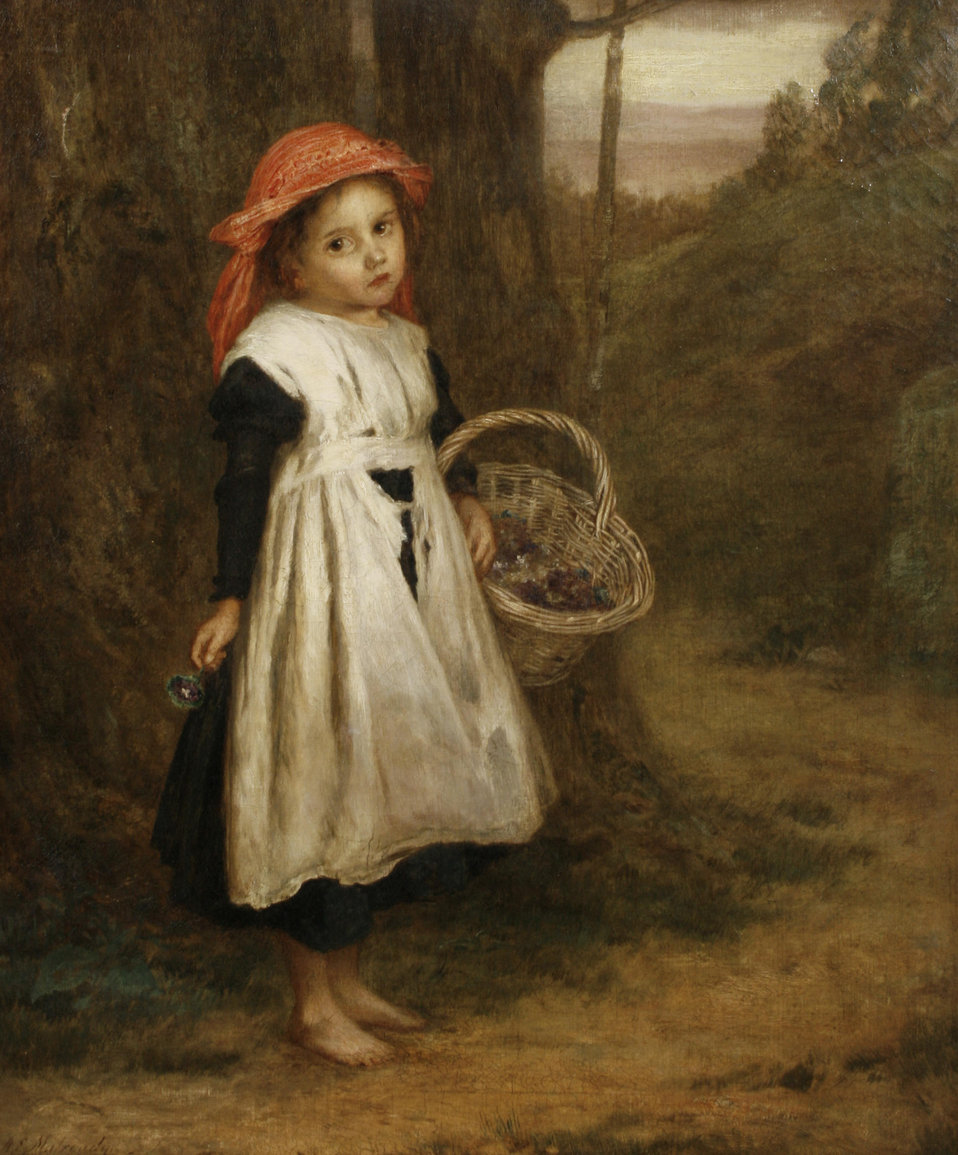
Augustus Edwin Mulready A Little Violet Seller 1877